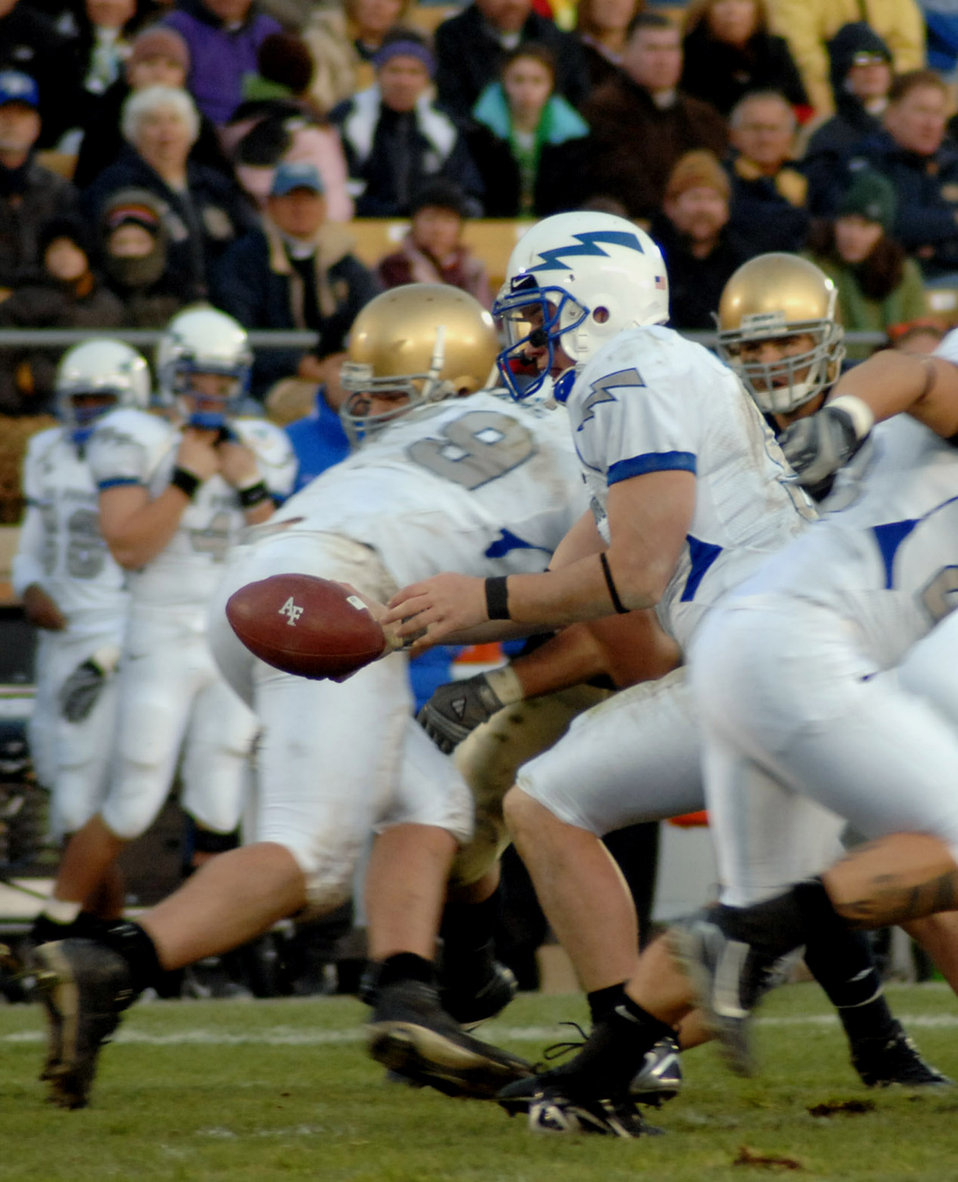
Football: Falcons outfight Irish, 41-24

U.S. Air Force Academy Falcons quarterback Shaun Carney looks to hand off the ball in the Falcons' 41-24 victory over Notre Dame Nov. 10 at Notre Dame Stadium in Indiana.